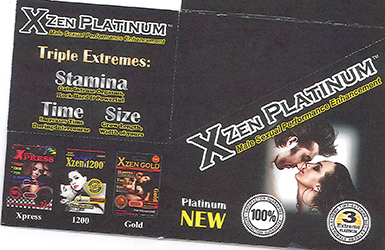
RECALLED – Dietary Supplement

April 1, 2014 – Product Recall – Nova Products, Inc. Issues Voluntary Nationwide Recall of Dietary Supplements with Undeclared Active Pharmaceutical Ingredients.